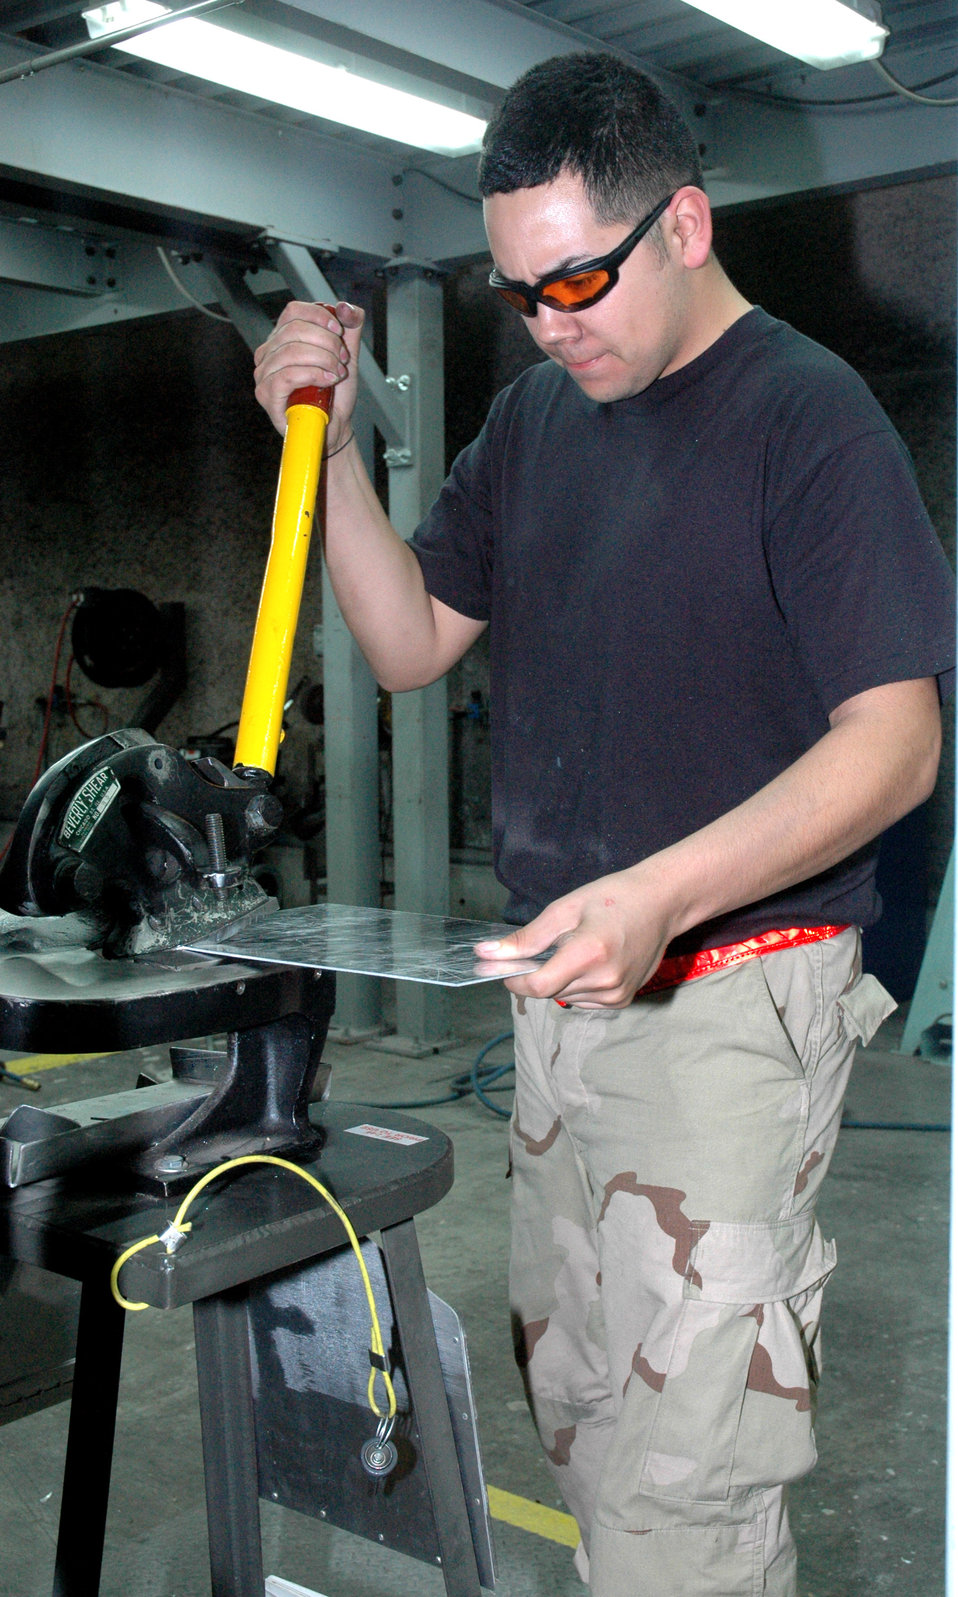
Airmen's customized parts keep planes in fight

Airman 1st Class Francisco Estrada fabricates an auxiliary power unit mounting bracket Feb. 20 for the left main landing gear door of a C-130 Hercules in Southwest Asia. Aircraft structural maintenance journeyman, such as Airman Estrada, regularly create aircraft parts that are not mass produced by manufacturers. He is deployed with the 379th Expeditionary Maintenance Squadron.